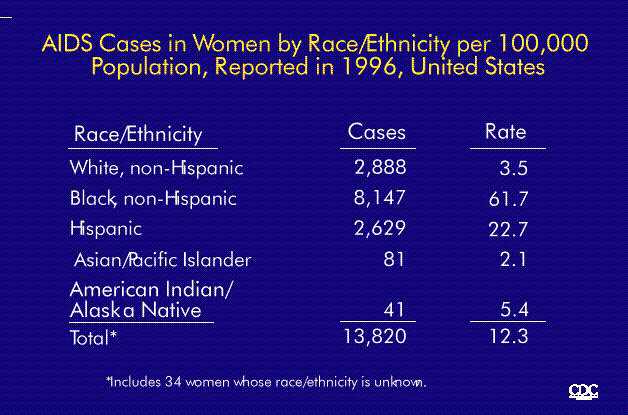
AIDS Cases in Women by Race/Ethnicity per 100,000 Population, Reported in 1996, United States